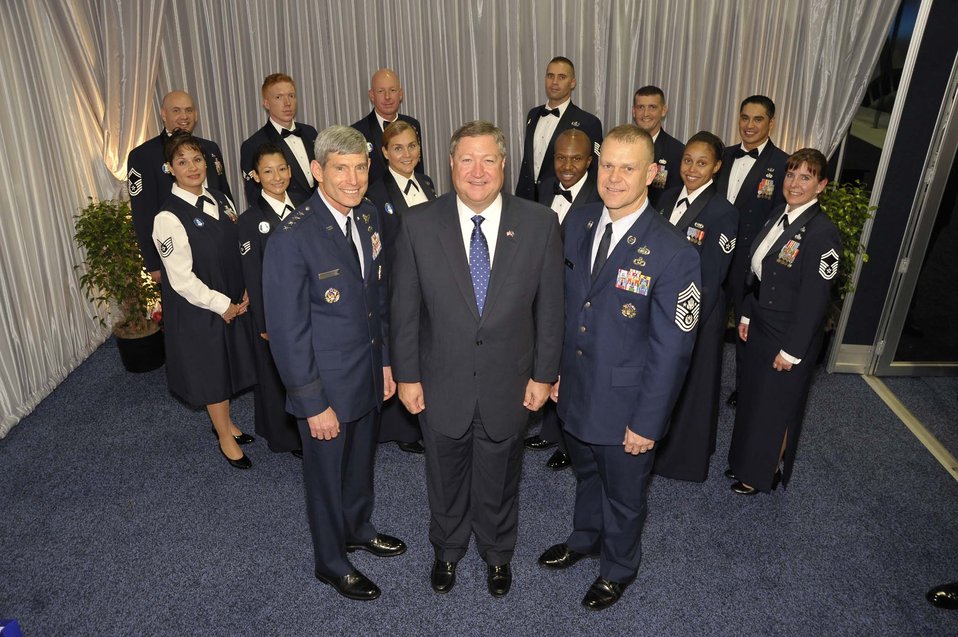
Air Force officials recognize 12 Outstanding Airmen of Year

Air Force Chief of Staff Gen. Norton Schwartz, Secretary of the Air Force Michael Donley and Chief Master Sergeant of the Air Force James Roy pose with the 12 Outstanding Airmen at the Air Force Association Air and Space Conference and Technology Exposition on Sept. 14, 2009, in Washington.